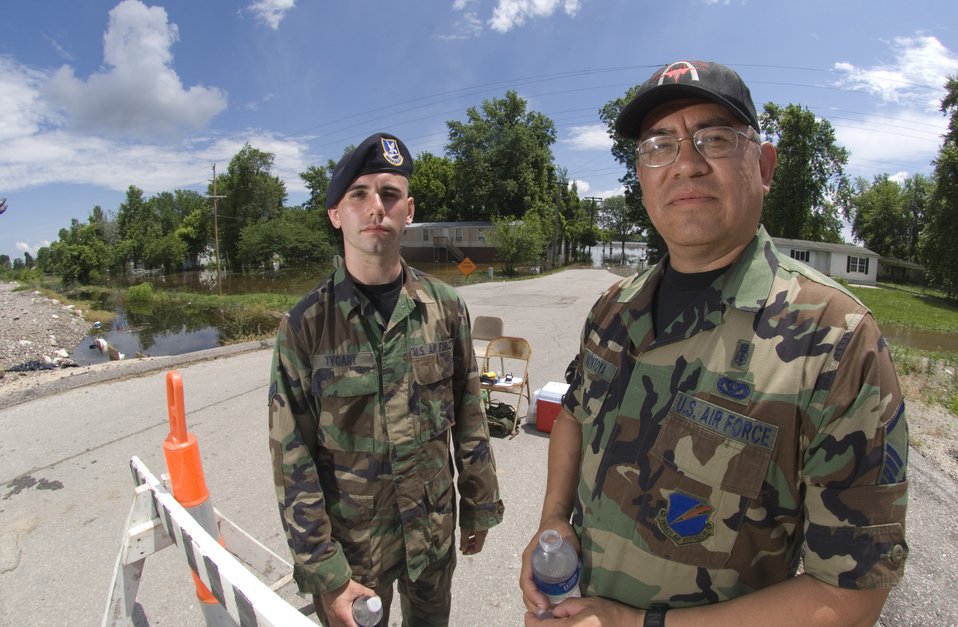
National Guards protect checkpoints

Master Sgt. Chris Montoga, right, and Airman First Class Jon Taggart man a checkpoint in Foley, Mo., June 20. Checkpoints manned by members of the Missouri Air National Guard are set up along a 30-mile stretch of the Mississippi River near Winfield, Mo. Air National guardsmen control access to flooded areas and provide a deterrent to would-be looters. Sergeant Montoga and Airman Taggart are both from the 131st Fighter Wing at Lambert Field, Mo.